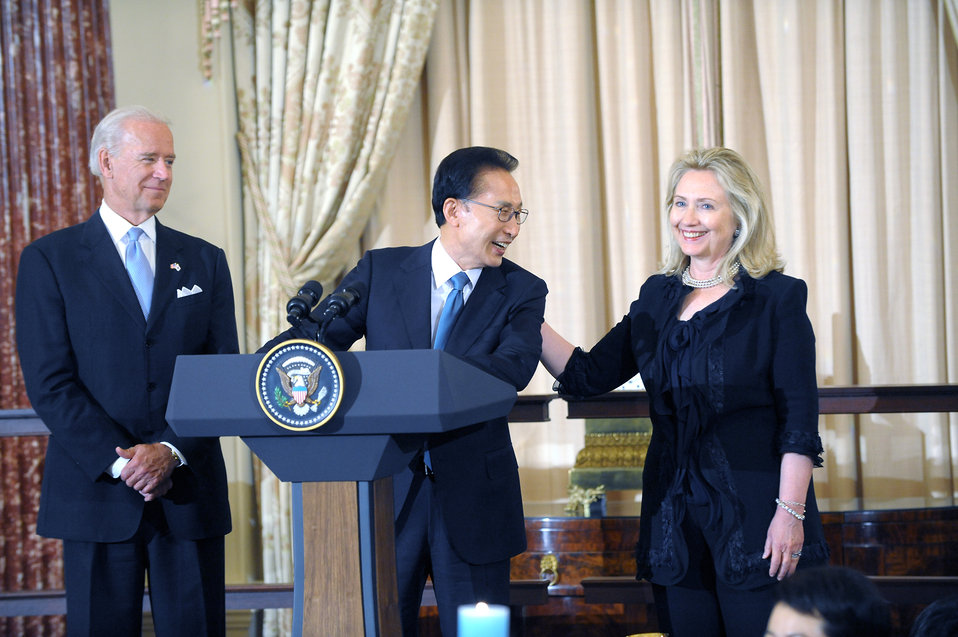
Republic of Korea President Lee, Vice President Biden, and Secretary Clinton Toast the U.S.-Republic of Korea Alliance

Republic of Korea President Lee Myung-bak, center; U.S. Vice President Joseph Biden, left; and U.S. Secretary of State Hillary Rodham Clinton; right, toast the U.S. alliance with the Republic of Korea, at the U.S. Department of State in Washington, D.C., on October 13, 2011.